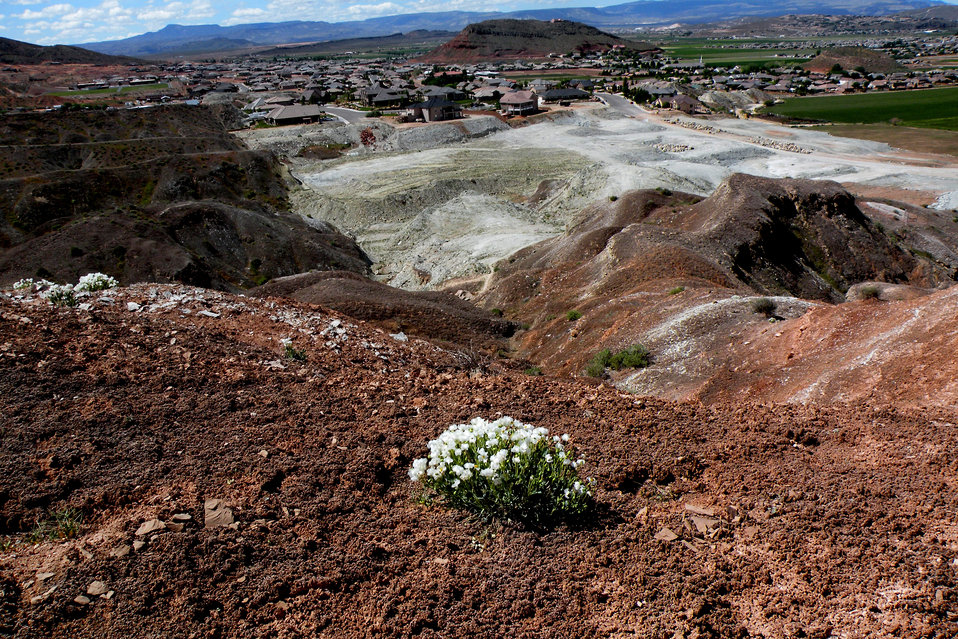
Dwarf bearclaw poppy (Arctomecon humilis)

Urban encroachment on dwaf bearclaw poppies near the town of Washington in Washington County, UT. The dwarf bearclaw poppy is endemic to Washington County, UT. The species occurs on rolling hills and bluffs in sparsely-vegetated desert shrub communities between 2,700 ft. and 3,330 ft. in elevation. It is listed endangered